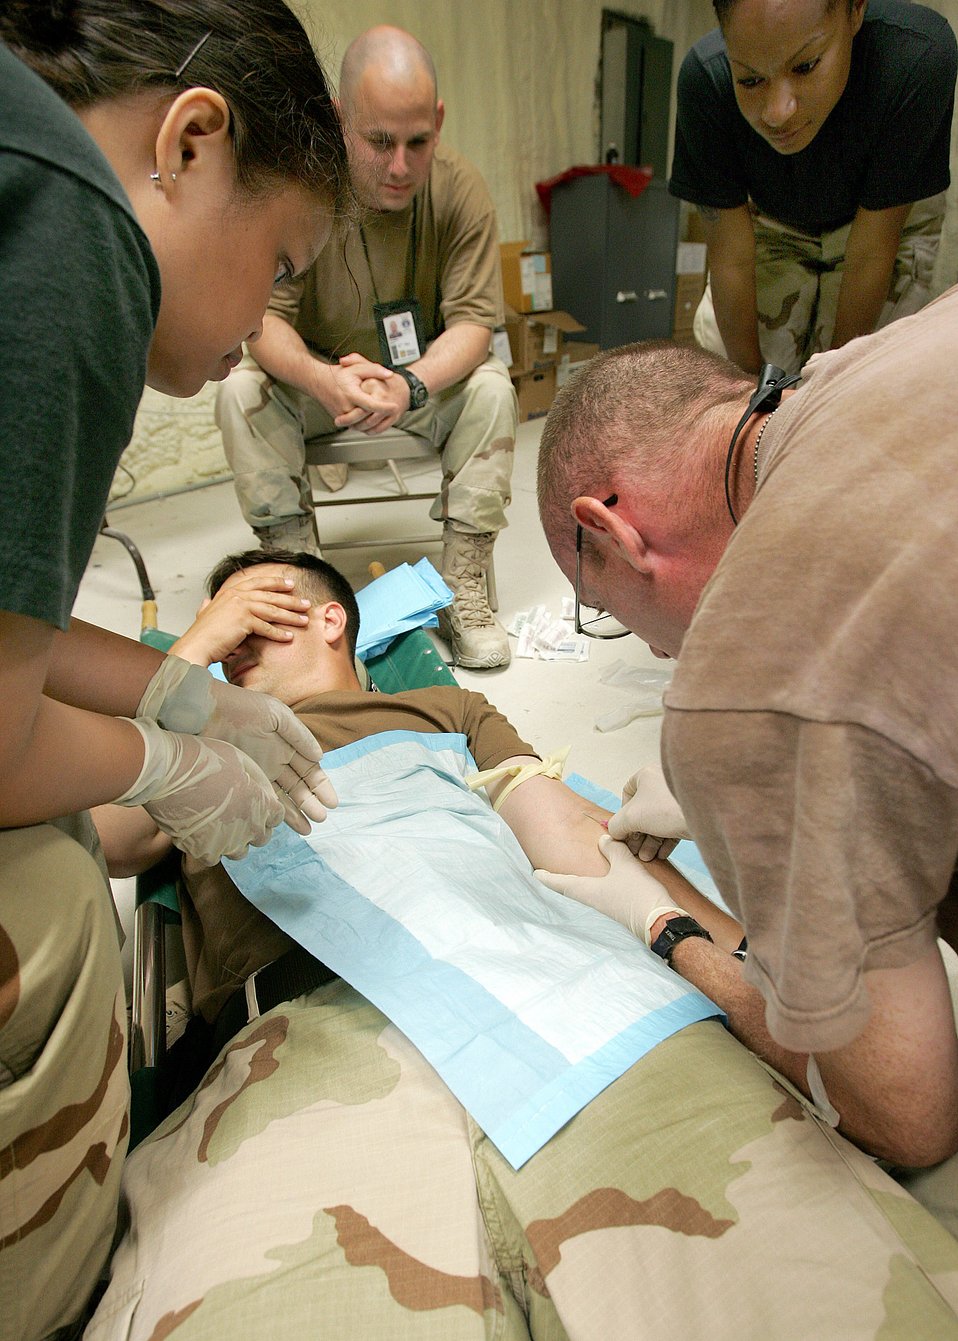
Combat convoy training

CAMP BULLIS, Texas -- Staff Sgt. Becky Braley (left) watches Tech. Sgt. William Byrd (right) insert an IV into Tech. Sgt. Brian Pederson's arm during the Basic Combat Convoy Course combat lifesaver training. Sergeant Braley is a course instructor and medic from Seymour Johnson Air Force Base, N.C. Sergeant Byrd is from Scott AFB, Ill., and Sergeant Pederson is from Dover AFB, Del.